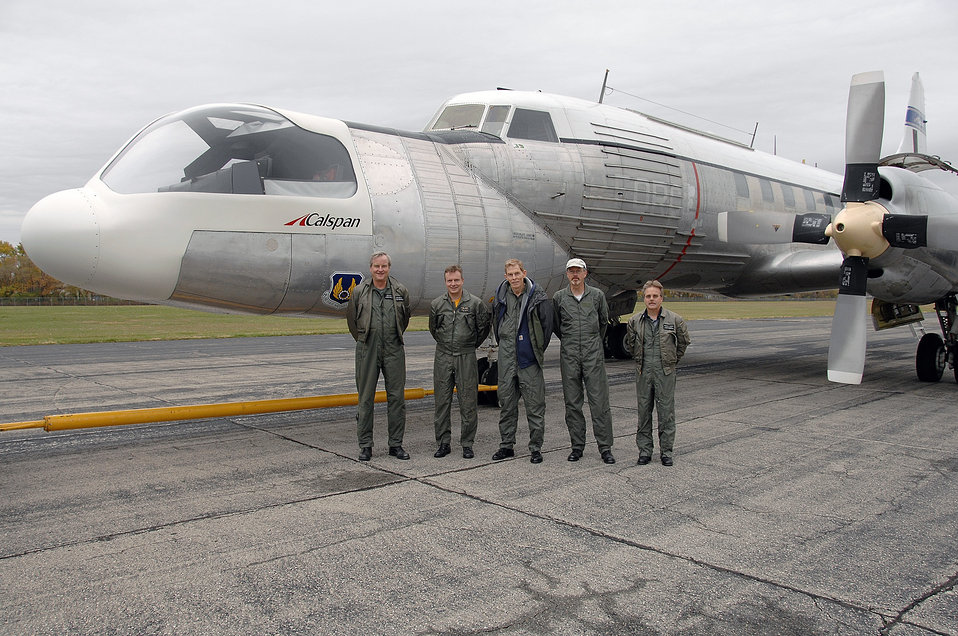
In-Flight Simulator's last flight

The crew for the final flight of the U.S. Air Force C-131 known as the Total-In-Flight Simulator pose with the aircraft Nov. 7 near a restoration hangar at Wright-Patterson Air Force Base, Ohio. The unusual aircraft flew some 2,500 research flights and contributed to the advancement of many of the flight technologies integral to today's fleet. Prior to its retirement, the TIFS, a 1955 Convair, was the oldest operating aircraft in the Air Force inventory.